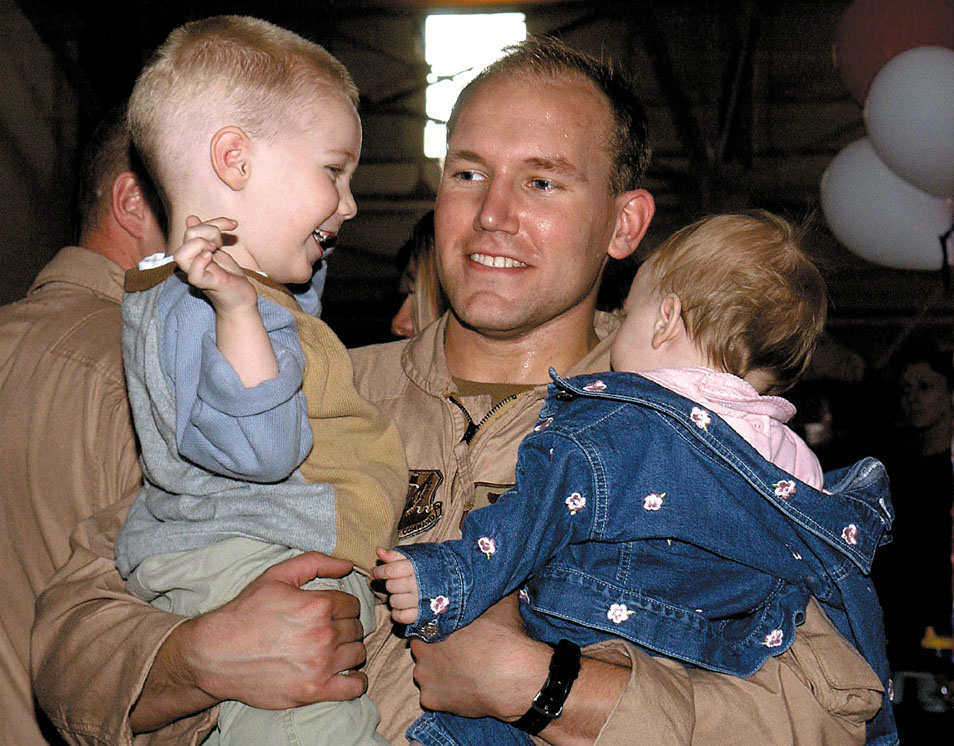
Glad to see you dad

MINOT AIR FORCE BASE, N.D. -- Capt. Gary Berger, a 23rd Bomb Squadron electronic warfare officer, is welcomed home from serving in Operation Iraqi Freedom by his son, Vaughn, and his daughter, Ava.